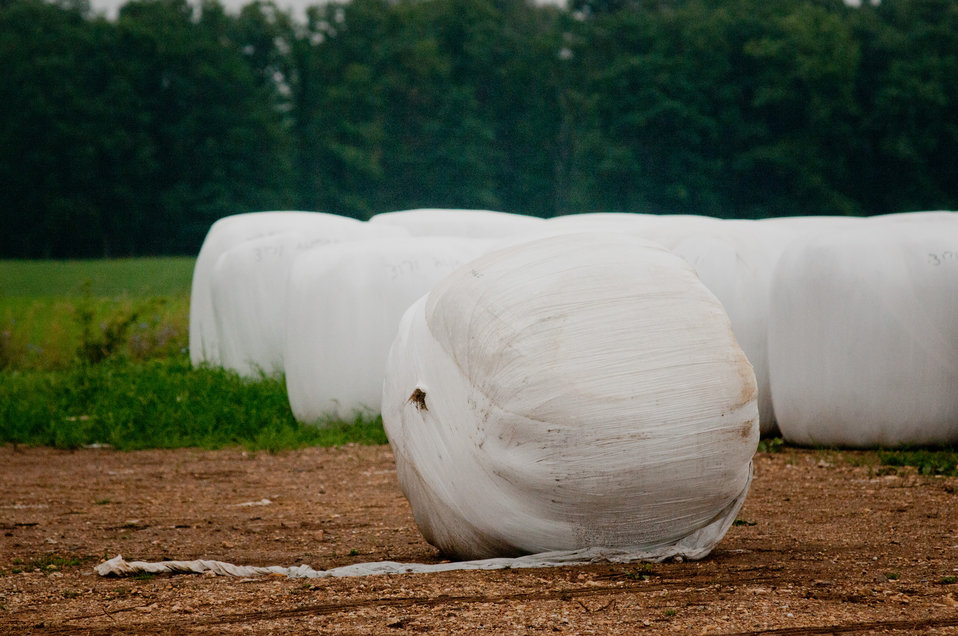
White plastic wrapped bales of pasture grass and alfalfa have been fermenting for months to create sweet silage that stores well and can be used to feed cattle at varying amount all year long at Nick’s Organic Farm is owned by Nick Maravell in Adamstown, MD on Friday, July 12, 2013. The fermentation process improves the taste and increases the vitamin levels in it. The farm produces Black Angus beef, chicken, turkey, eggs, hay, soybeans, corn, alfalfa, orchard grass, rye; and other crops. The cattle are 100% grass-fed receiving certified organic pasture, certified organic hay (in winter), water and mineral salts mixed with sea kelp. The cattle are not fed hormones, antibiotics or animal products. Poultry feed from grain is ground from organic grain. The poultry also graze on organic pastures. The farm has conducted on-farm research with federal, state and non-profit agencies to refine organic practices. An organization such as the U.S. Department of Agriculture (USDA) Agricultural Research Service (ARS) center in Beltsville has been able to conduct research to improve organic crops and to breed and manage the cattle so that they have.